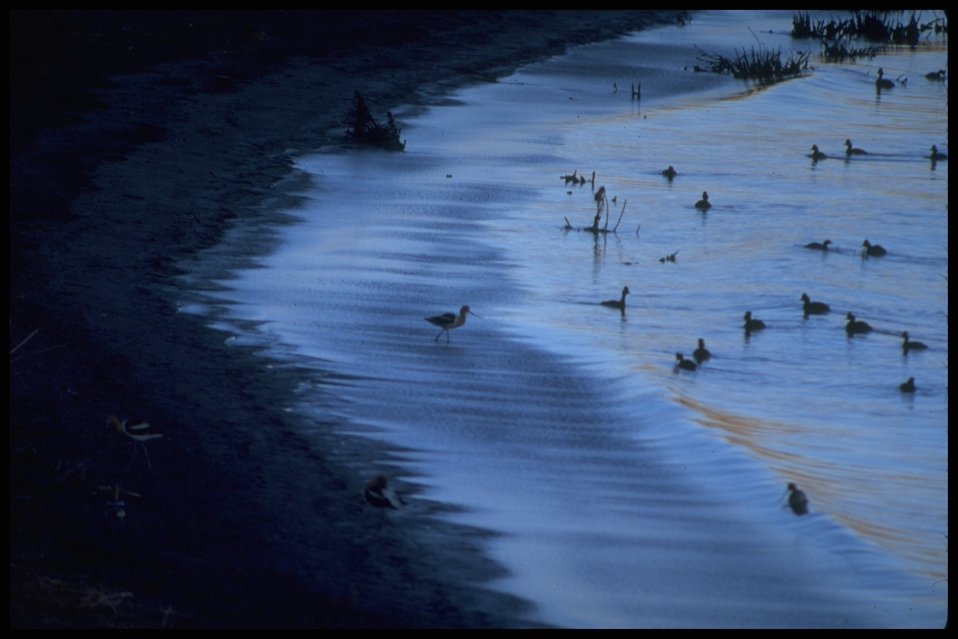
Shore birds, Lakeview District.